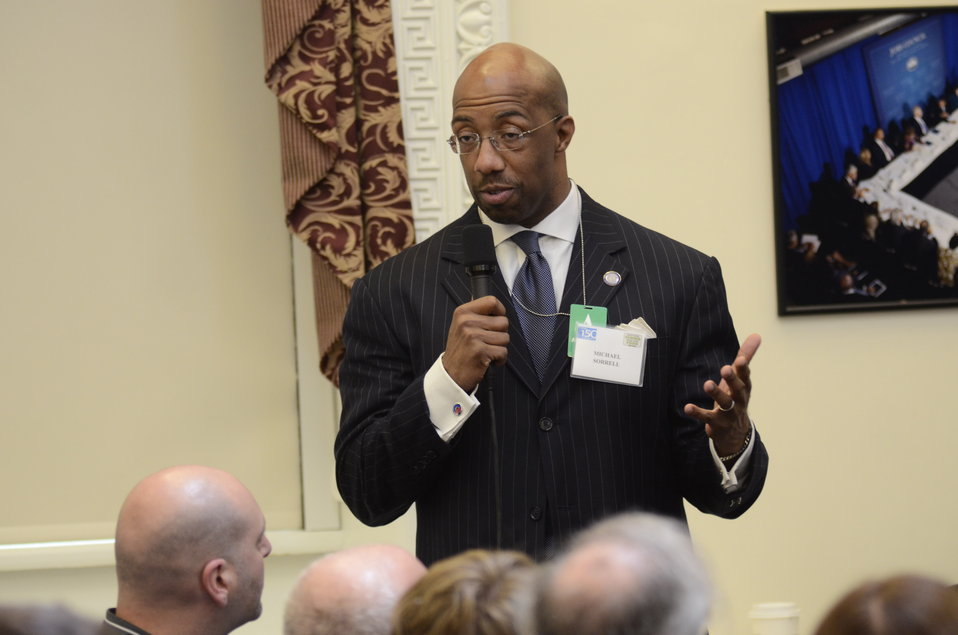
Michael Sorrell, President, Paul Quinn College, Dallas TX. Michael is committed to increasing healthy food access for this small, traditionally African American College in south Dallas. Among his efforts include flipping the football field into a farm to teach and feed his students. Agriculture Deputy Secretary Kathleen Merrigan, a Know Your Farmer Compass event that utilized twitter social media to continue the National Conversation on Local and Regional Food projects and how they offer economic opportunities to local farmers, ranchers and food entrepreneurs. The virtual conversation took place from the White House, and Twitter was used to expand the conversation worldwide, from Washington, D.C., on Monday, March 5, 2012. Unlike most events where mobile communication devices are asked to be turned off, here it was asked that they remain on allowing people to have social media conversations.